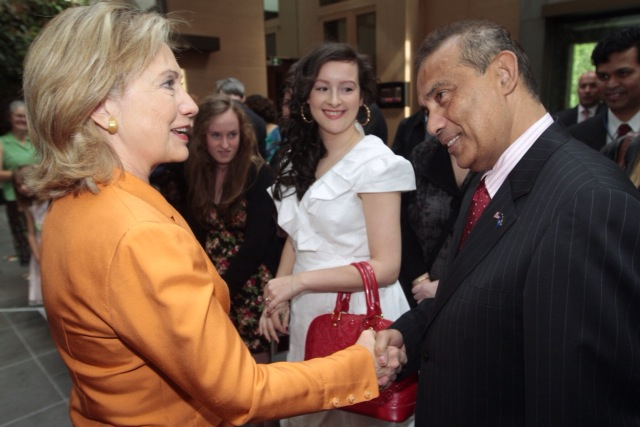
Secretary Clinton Meets With Consulate Melbourne Staff and Their Families

U.S. Secretary of State Hillary Rodham Clinton meets with U.S. Consulate Melbourne staff and their families in Melbourne, Australia, on November 7, 2010.